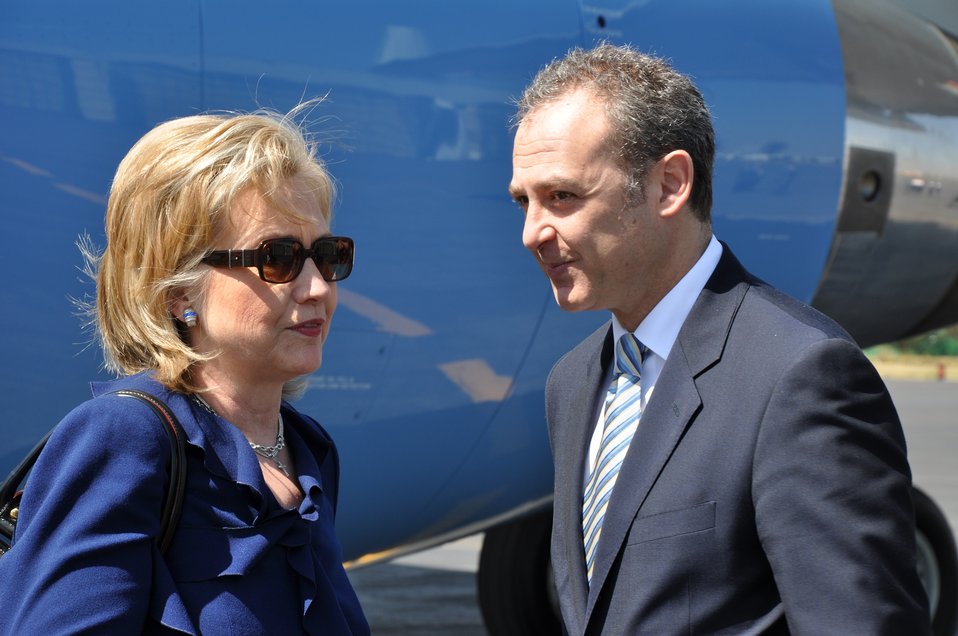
Secretary Clinton With Mexican Ambassador to the U.S. Arturo Sarukhan

2010 0324 2 Secretary Clinton With Mexican Ambassador to the U.S. Arturo Sarukhan .jpg - U.S. Secretary of State Hillary Rodham Clinton is greeted by Mexican Ambassador to the U.S. Arturo Sarukhan in Presidential Hangar, Mexico City, March 25, 2010.